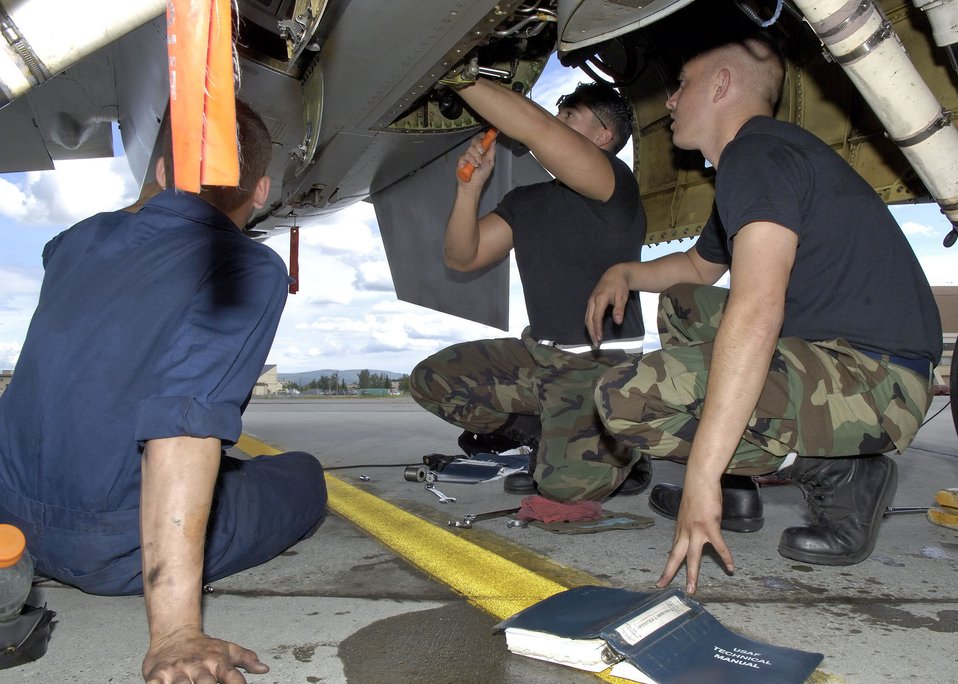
Misawa F-16 unit flying high at Cooperative Cope Thunder

Aircraft maintainers from the 13th Fighter Squadron at Misawa Air Base, Japan, look under the belly of an F-16 Fighting Falcon to see what caused a failure to launch for a familiarization flight on July 19. The squadron is participating in Cooperative Cope Thunder 06-3 at Eielson Air Force Base, Alaska.